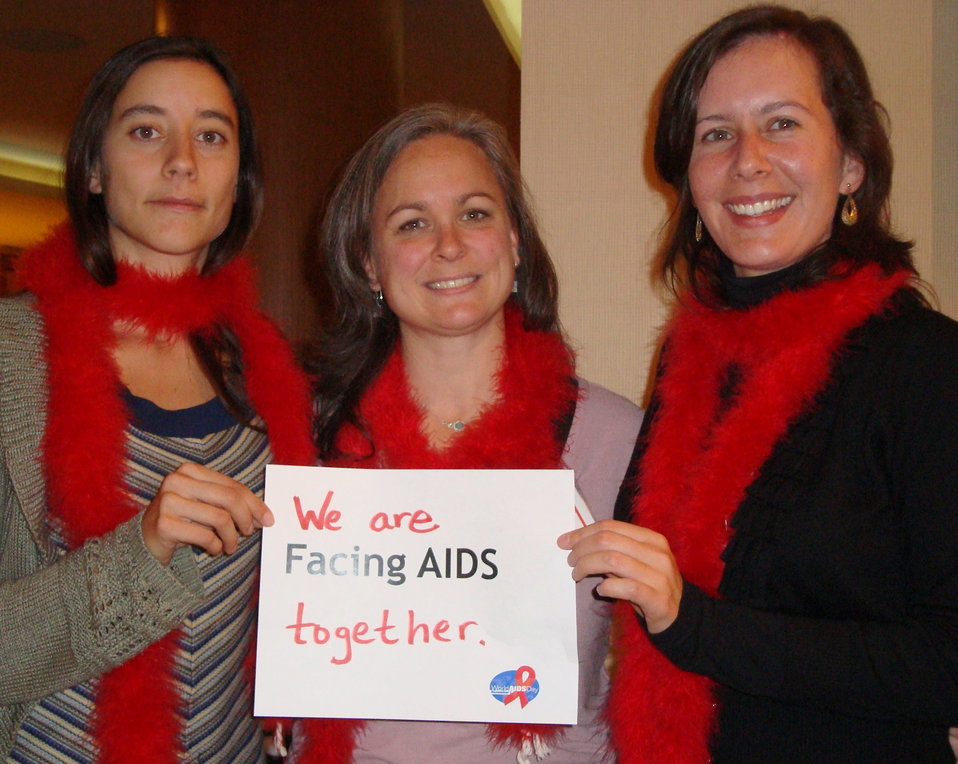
FacingAIDSCampaign 055